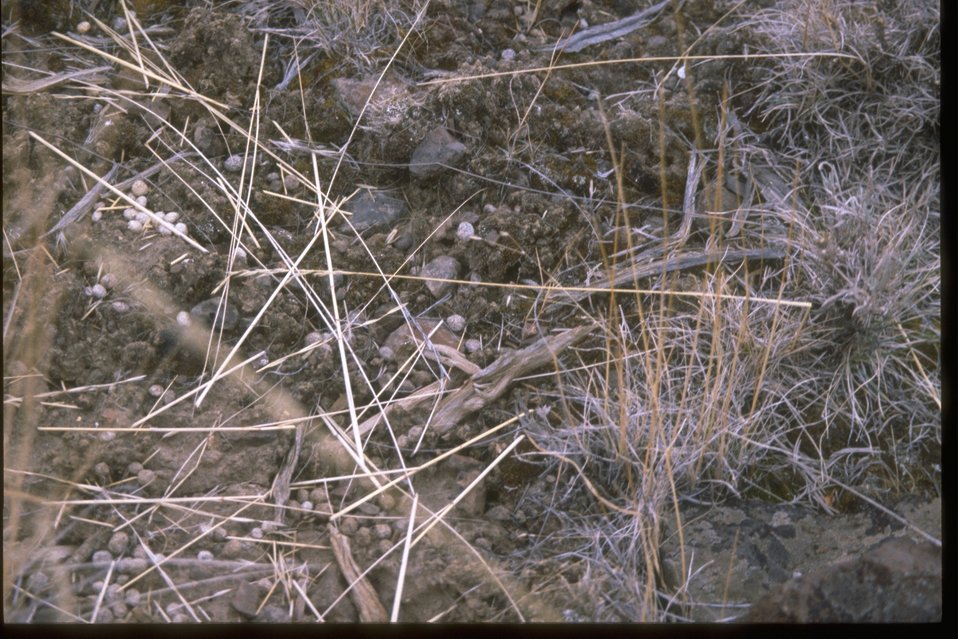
Soil surface with plant litter.